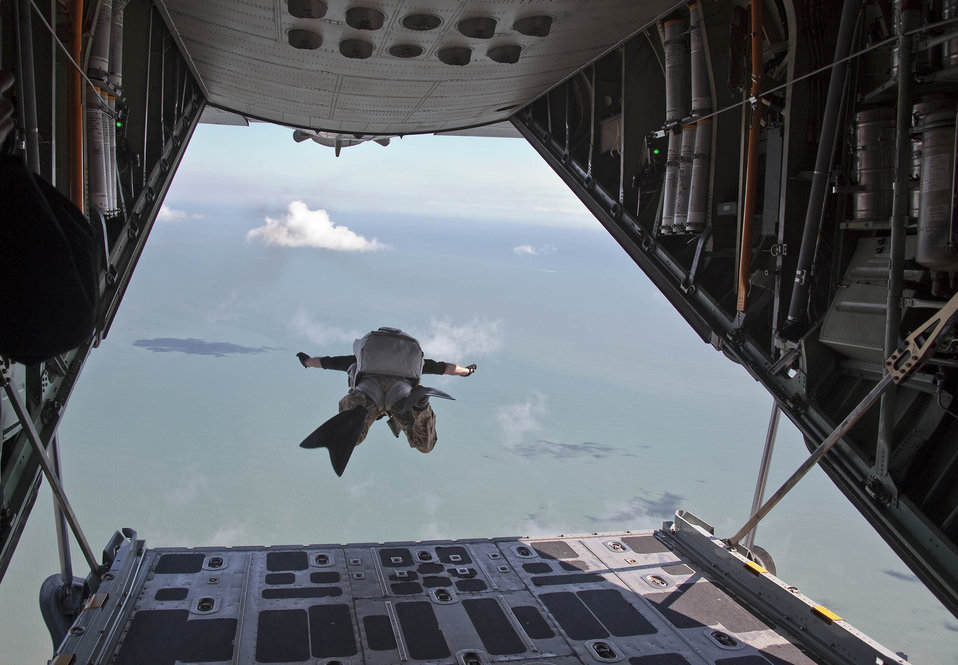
Practice makes perfect

A pararescueman from the 920th Rescue Wing at Patrick Air Force Base, Fla., free falls from a HC-130P/N King refueling aircraft at 3,500 feet during a Cocoa Beach Air Show demonstration Nov. 4, 2011. The Cocoa Beach Air Show will feature 920th RQW Rescue Reservists, HC-130P/N King aircraft and HH-60G Pave Hawk helicopters Nov. 5-6. Pararescuemen are able to perform life-saving missions in the world's most remote areas, by air, land or water.